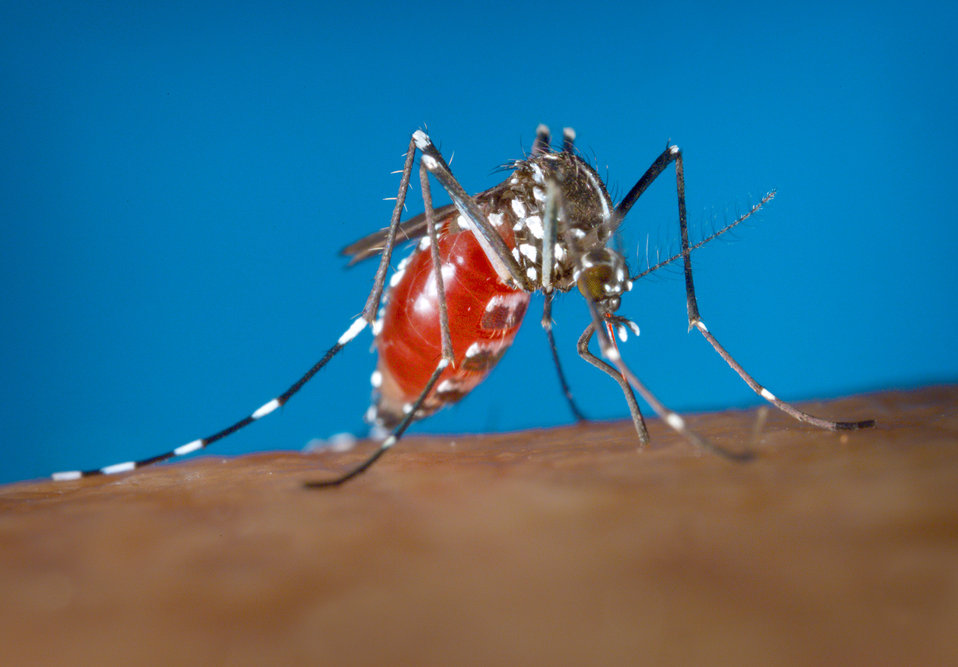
This image depicts an Aedes albopictus female mosquito feeding on a human host.